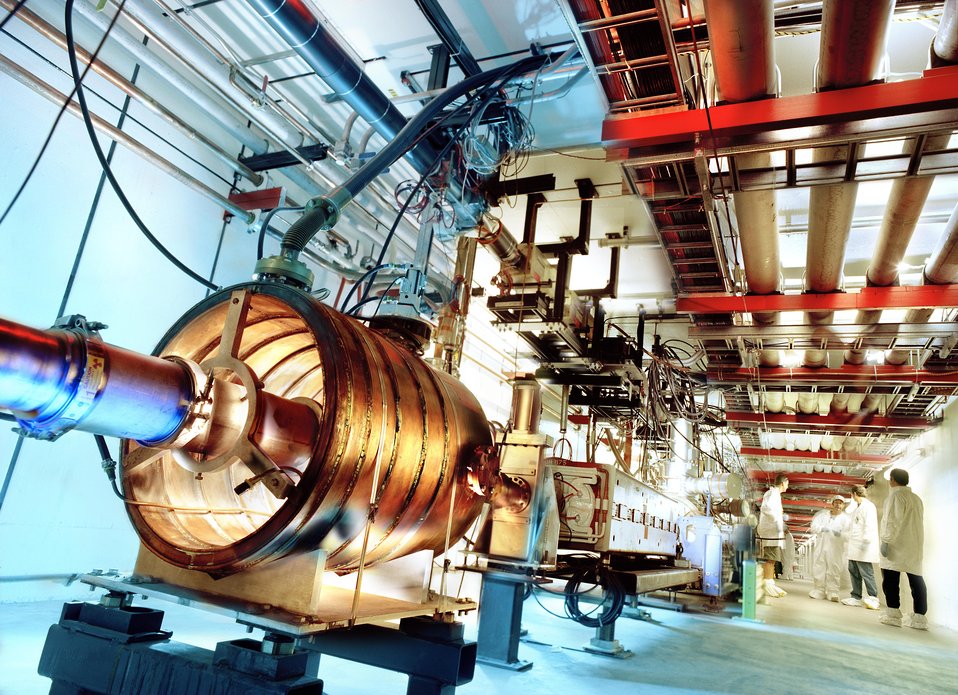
MAIN INJECTOR ACCELERATOR AT FERMI NATIONAL ACCELERATOR LABORATORY.

The main injector, the largest civil construction project at the lab since its inception, will increase the collision rate of protons and antiprotons in the Tevatron by a factor of at least five. The new machine, which will replace the main rings as the fourth stage of acceleration, consists of a 2-mile circumference oval ring and another 2000 feet of structures connecting with booster and Tevatron.